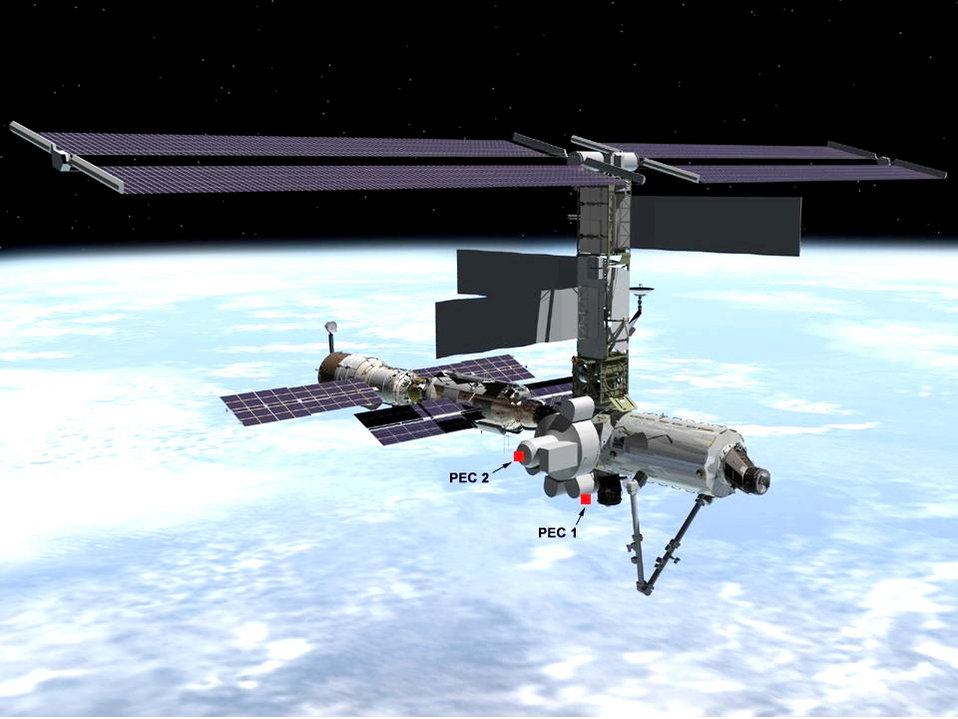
AF experiments to return home with Discovery

NASA GRAPHIC -- The graphic shows the locations where the Air Force experiments are located on the International Space Station. They will be retrieved and returned home Aug. 7 by the Space Shuttle Discovery crew as part of their mission.